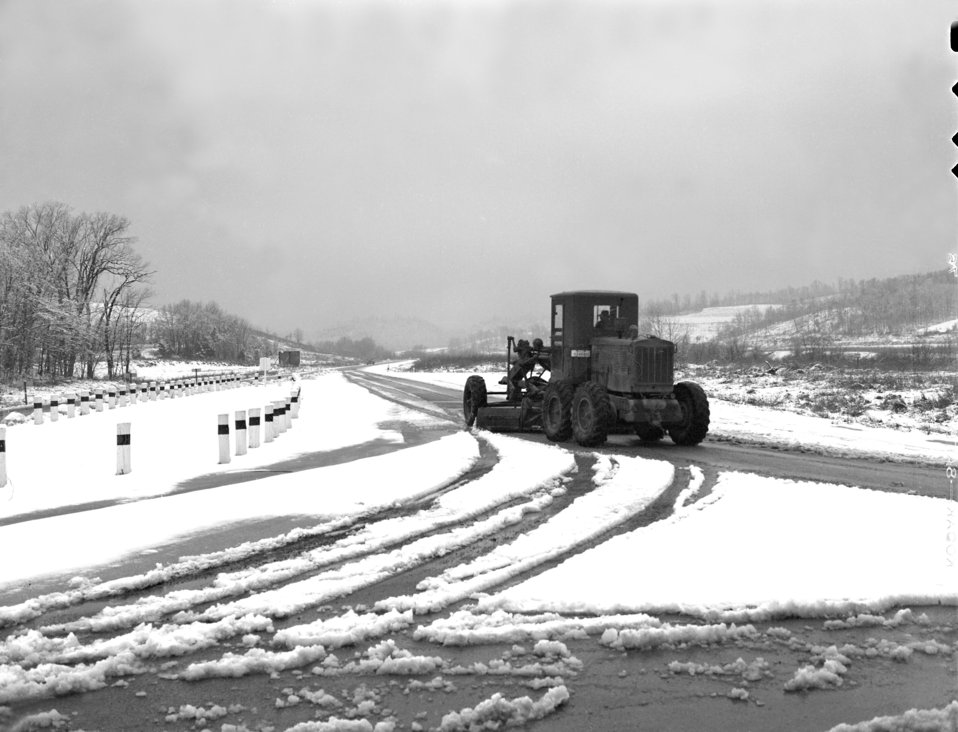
Snow Scenes Oak Ridge 1947

3306-16f DOE photo Ed Westcott 2-20-1947 Oak Ridge Tennessee